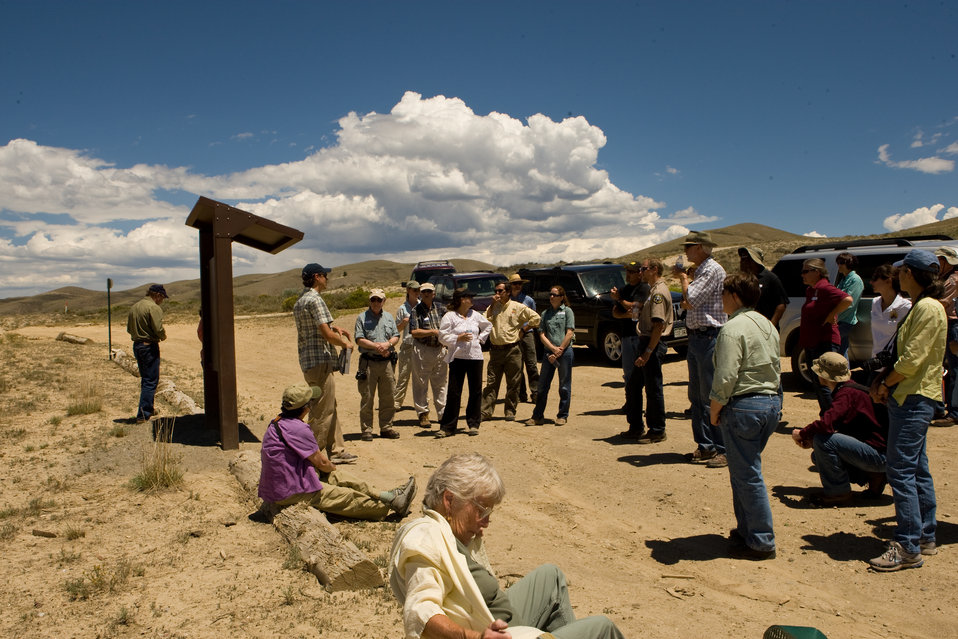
Natural Areas Program Kiosk in Kremmling

The Colorado Rare Plant Conservation Initiative (RPCI) is a partnership of 23 statewide and regional agencies, private organizations, and academic institutions working to conserve 121 rare plants in Colorado. As part of these efforts the group developed the Colorado Rare Plant Conservation Strategy, developed Best Management Practices to reduce energy development impacts, addressed climate change, and developed focused strategies for the conservation of individual species at eight priority landscapes. The group has also worked to coordinate volunteer efforts for plant conservation across the state.